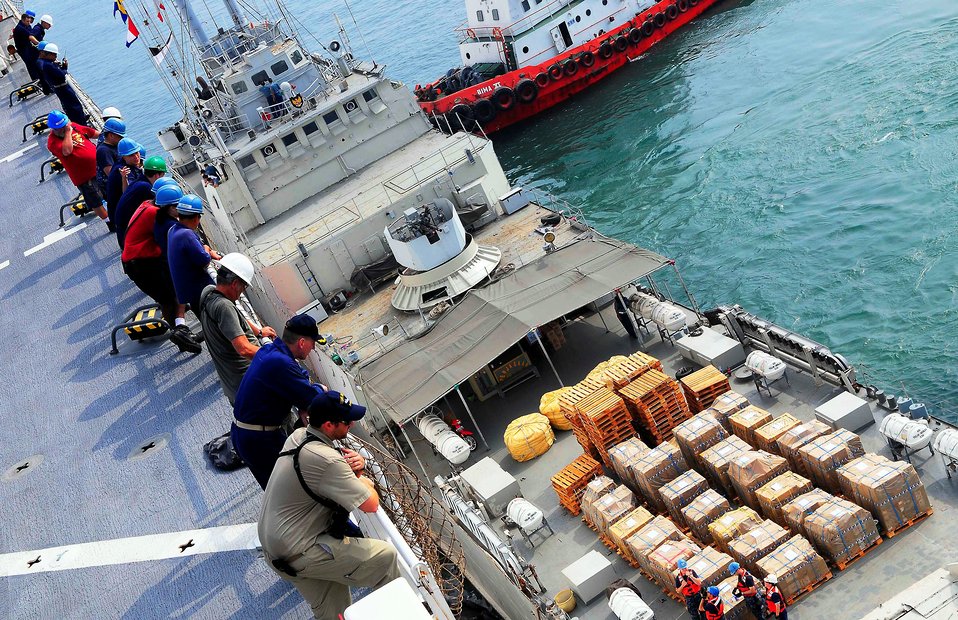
Sailors and Civilian Mariners Look On as Tug Boats Tow a Cargo Barge

Sailors and civilian mariners assigned to the Military Sealift Command hospital ship USNS Mercy (T-AH 19) look on as tug boats tow a cargo barge into position during a stores onload in support of Pacific Partnership 2010 on July 7, 2010. Mercy is en route to Indonesia during the fifth in a series of annual U.S. Pacific Fleet humanitarian and civic assistance endeavors to strengthen regional partnerships.